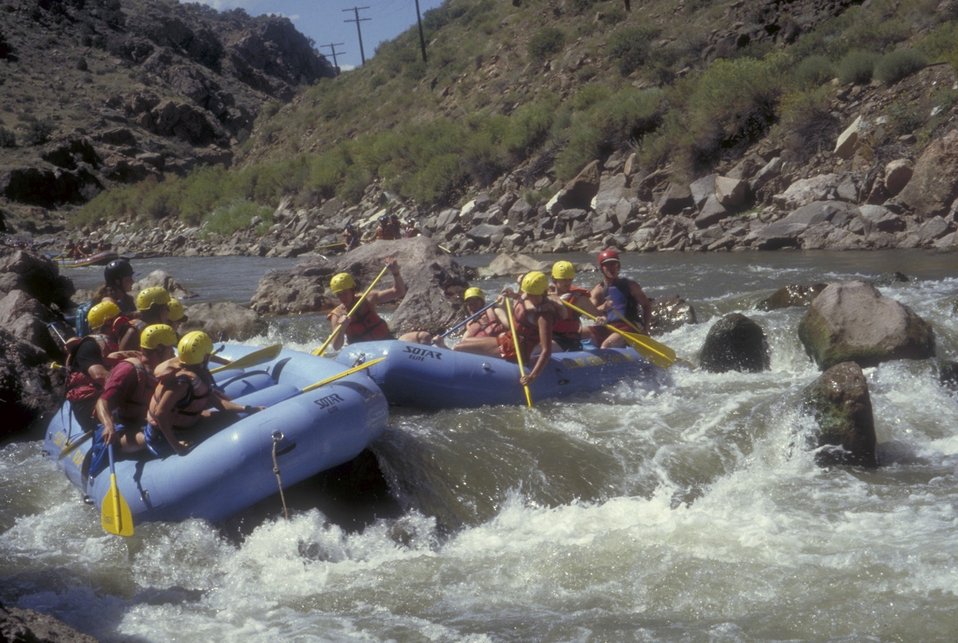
Rafting on the Arkansas River.